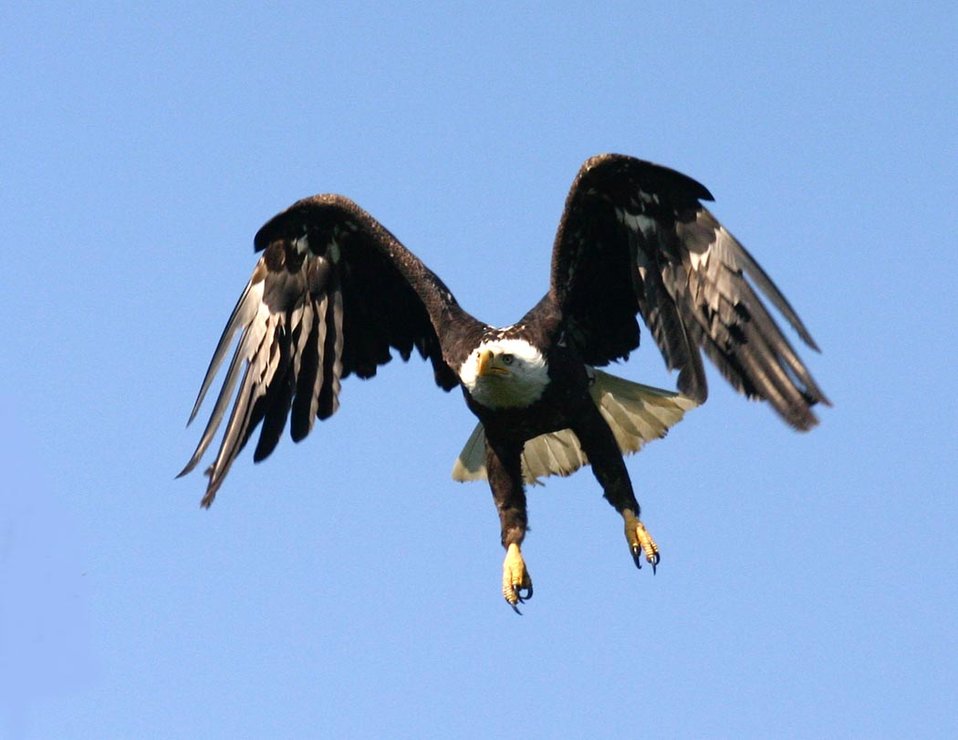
Bald Eagle

Image taken at the Gulkana River, Sourdough, Alaska. Image donated by Doug Alcorn.